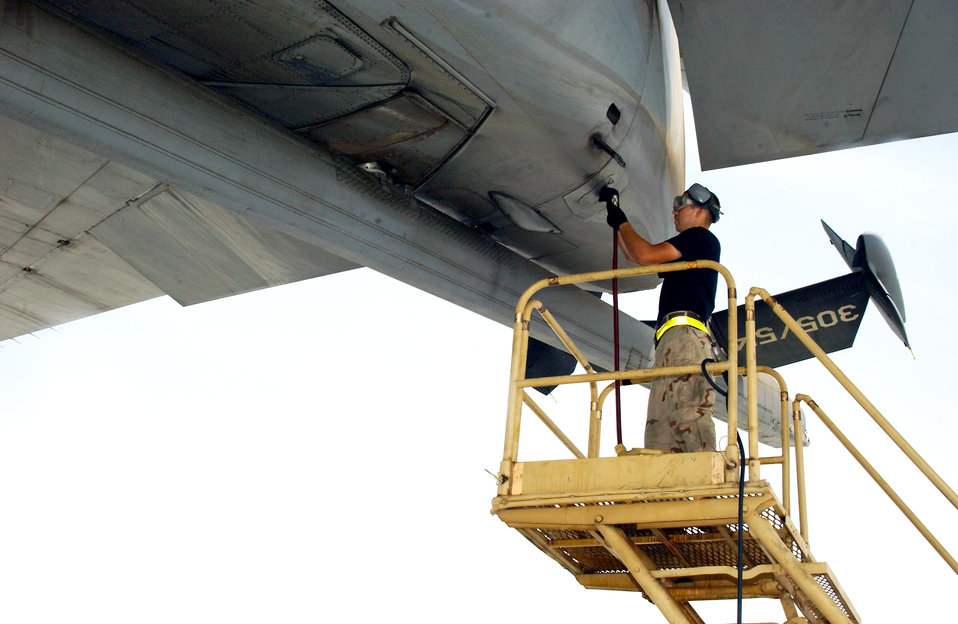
KC-10 maintainers keep mission flowing

Airman Nicholas Shoenhair services an engine on a KC-10 Extender with the 908th Expeditionary Air Refueling Wing at a deployed location in Southwest Asia on July 30. Airman Shoenhair is a KC-10 crew chief with the 380th Expeditionary Aircraft Maintenance Squadron.